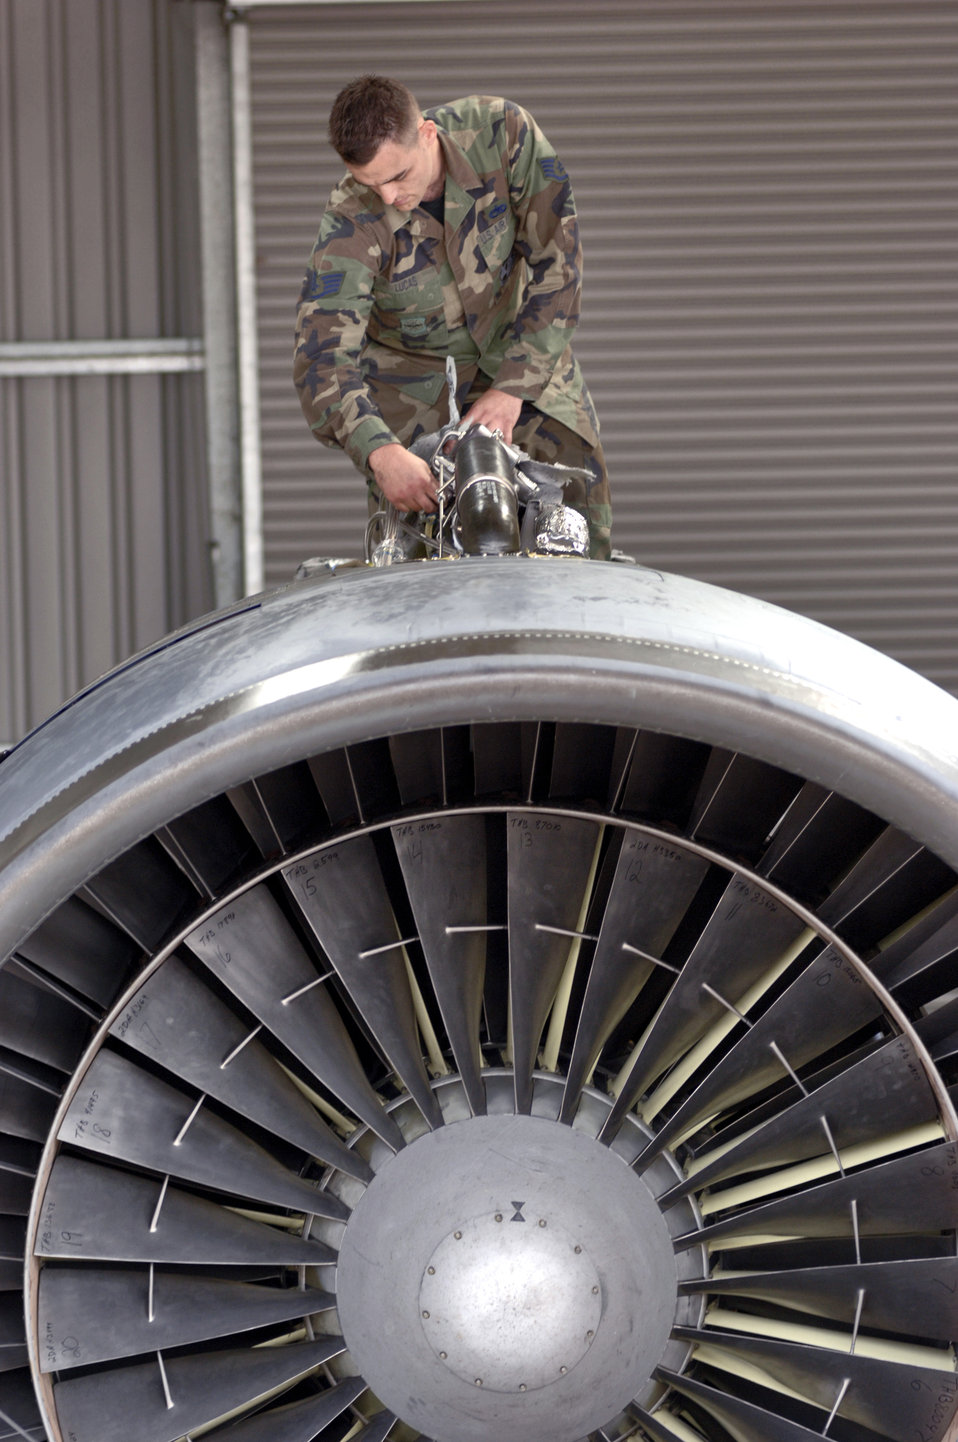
Aerial port Airmen make own training opportunities

Staff Sgt. Erik Lucas checks components atop a C-5 Galaxy turbofan engine at Royal Air Force Mildenhall, England, on July 31. The sergeant is an engine manger with the 727th Air Mobility Squadron and responsible for the spare turbofan engine kept for the giant transport aircraft. Each engine produces 43,000 pounds thrust, weighs 7,900 pounds and is nearly 27 feet long.